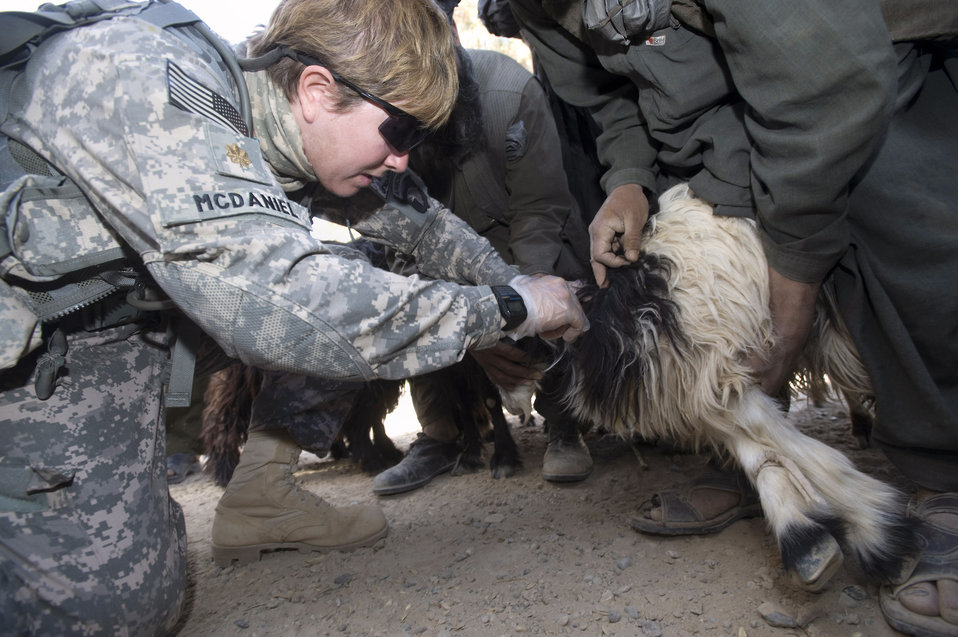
Veterinary care helps build relations with nomadic tribe

Army Maj. Mary McDaniel gives vitamin supplements livestock during a veterinary medical outreach conducted by the Zabul Provincial Reconstruction Team Oct. 17 in Qalat, Afghanistan. The PRT members offered free deworming and vitamin supplements during the VMO. Major McDaniel is a veterinarian deployed to Bagram Airfield, Afghanistan.